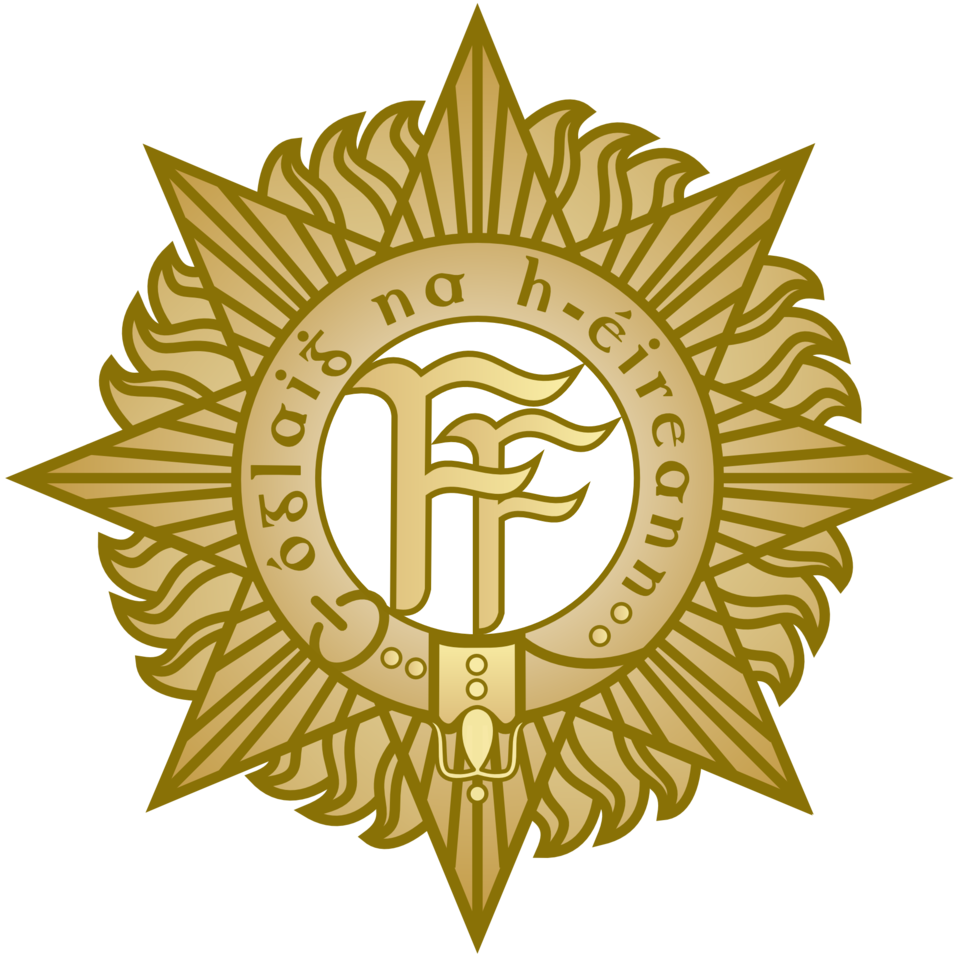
Badge of the Irish Defence Forces, sometimes called the 'FF Badge'. Originally designed in 1913 for the Irish Volunteers.